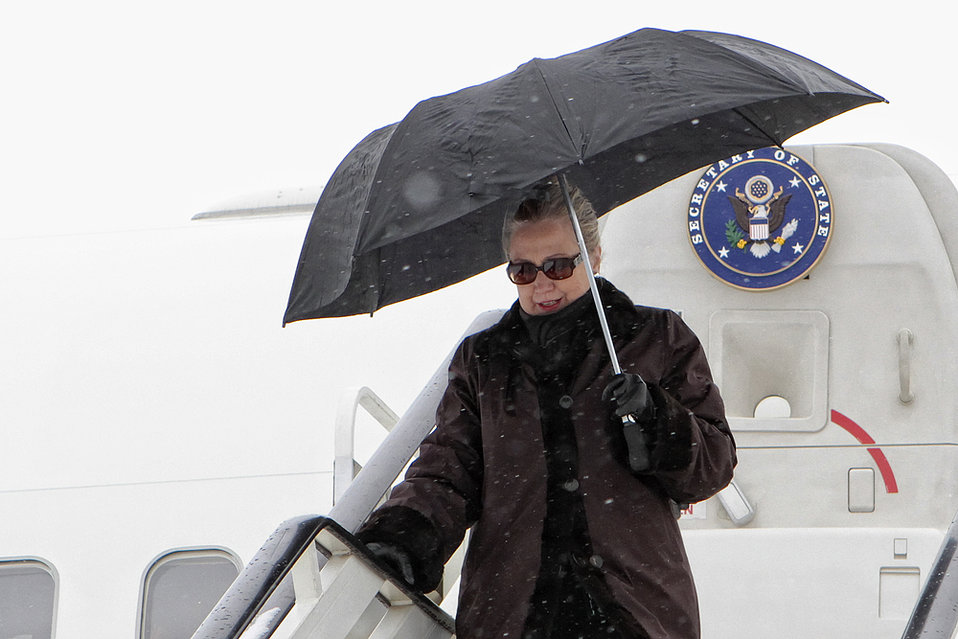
Secretary Clinton Arrives in Sofia, Bulgaria

U.S. Secretary of State Hillary Rodham Clinton arrives in Sofia, Bulgaria, on February 5, 2012.